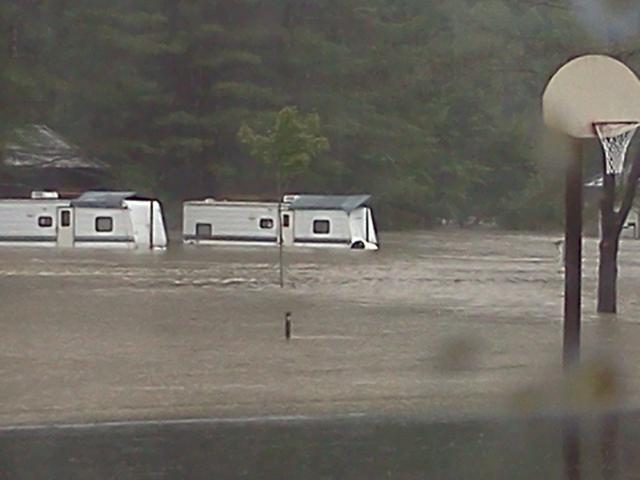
White River National Fish Hatchery

Flooding at the White River National Fish Hatchery in Bethel, Vt. after Hurricane Irene came through on Sunday, August, 28, 2011.